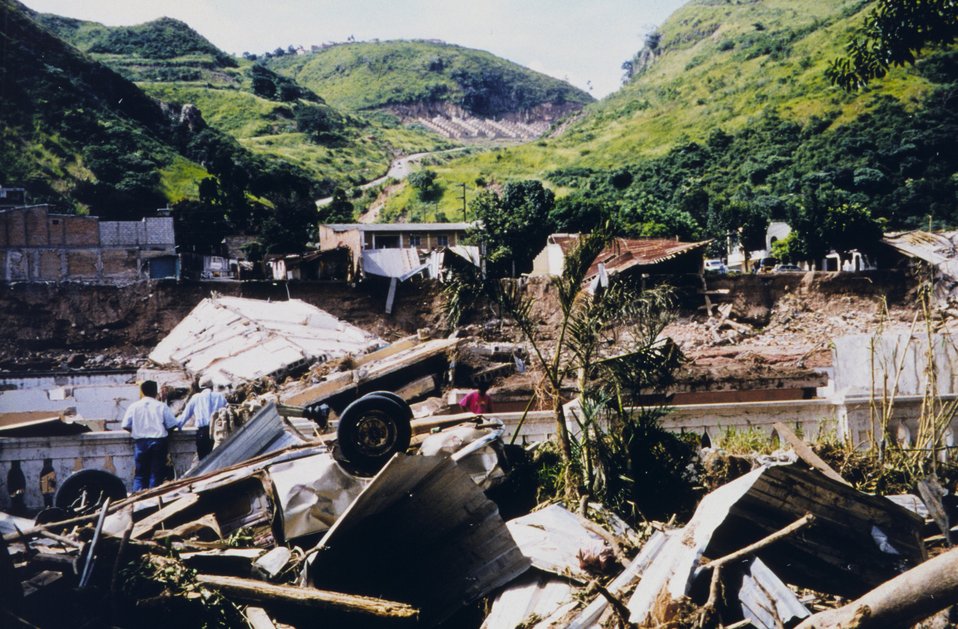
Flood damage along the Choluteca River caused by Hurricane Mitch. Over 9,000 deaths and 9,000 missing were attributed to Mitch making it the second most deadly hurricane in history ranking only below a 1780 hurricane in the Lesser Antilles.